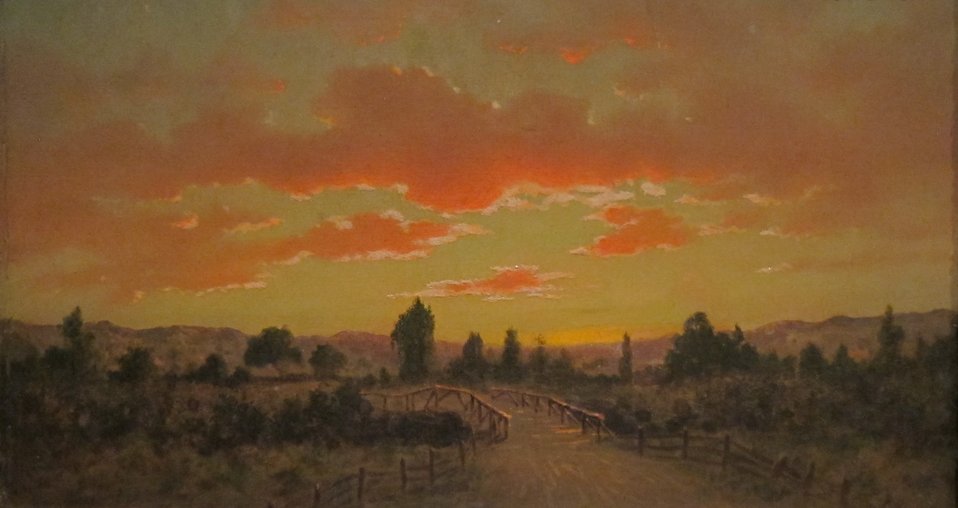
'Landscape' by Edward Edmondson, Jr., 1880-83, Dayton Art Institute